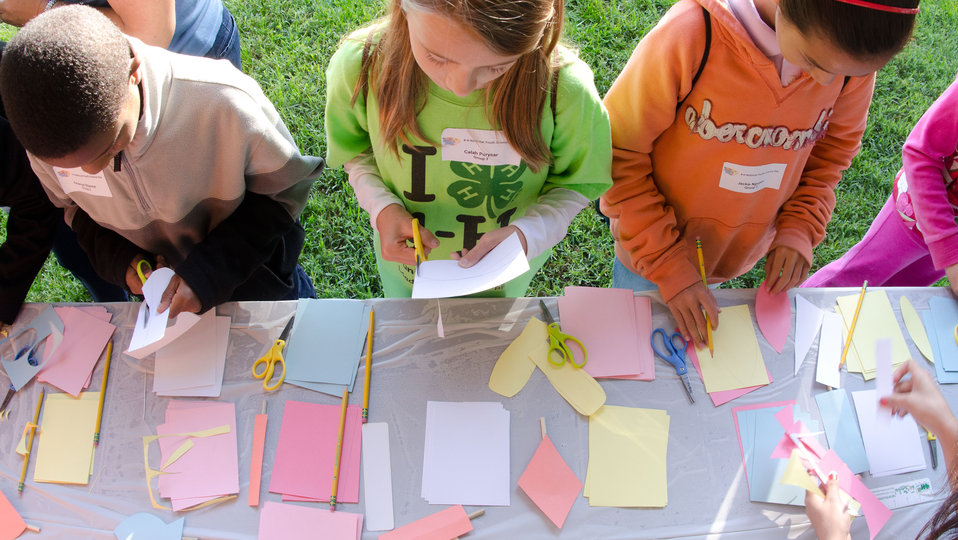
Some of the 150 children from Virginia and Maryland, participated in the 4-H Youth Science Day “Wired for Wind”. The 4H youth design and cut out paper wind generator blades at the National 4-H Conference Center in Chevy Chase, MD, on Wednesday, October 5, 2011. USDA and the 4-H are working to develop the next generation of scientists, engineers and technologists to help our nation recapture its status as a leader in these fields.